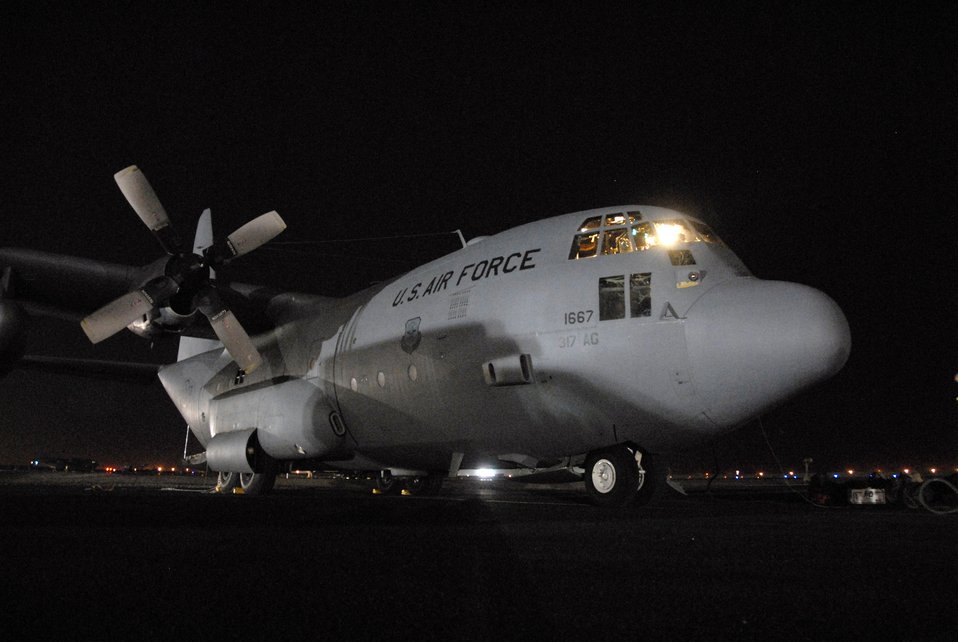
Special delivery

A C-130 Hercules assigned to the 737th Expeditionary Airlift Squadron awaits its crew, passengers and cargo before being flown on a mission into Iraq May 13 from an air base in Southwest Asia. The 737th EAS is assigned to the 386th Air Expeditionary Wing. The Airmen there received and processed more than 330,000 passengers and 48,000 tons of cargo, baggage and mail that were flown on more than 8,200 C-130 and C-17 Globemaster III missions since January. The C-130 is from Dyess Air Force Base, Texas.